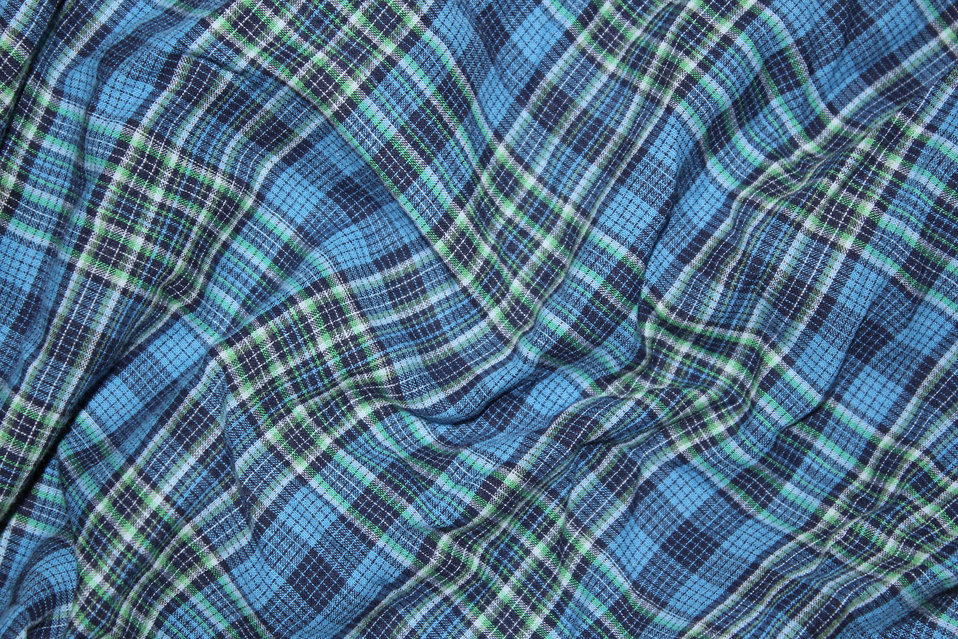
Checkered background 2.